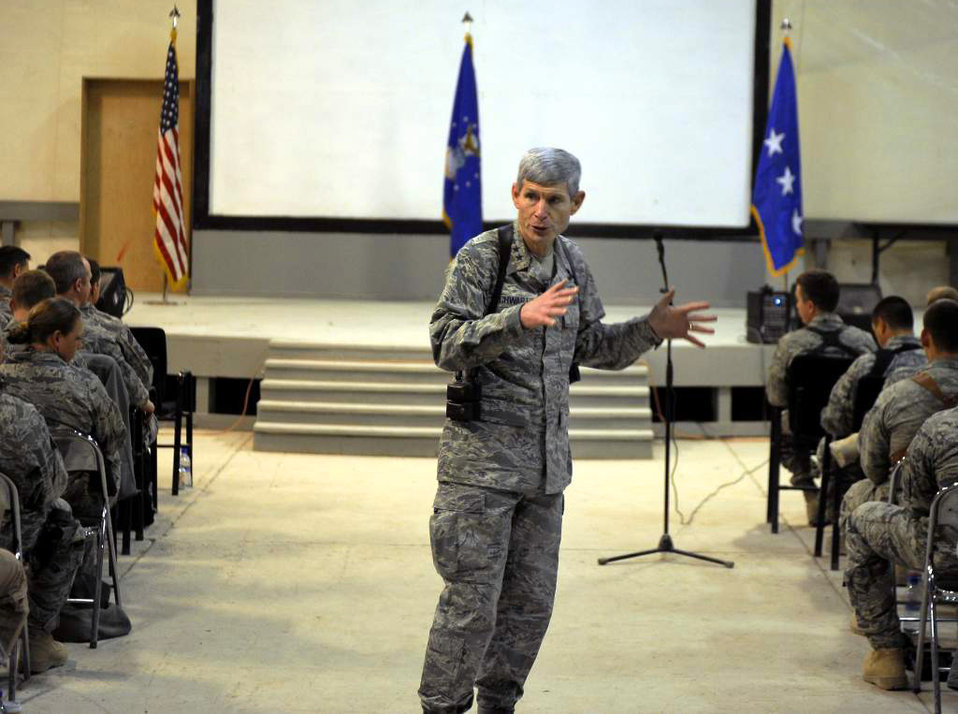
CSAF visits AFCENT bases

Air Force Chief of Staff Gen. Norton Schwartz takes questions from the audience during an “all call” Jan. 19, 2011, at Kandahar Airfield, Afghanistan. The general spoke to Airmen about manning, suicide prevention, and the repeal of Don’t Ask Don’t Tell. He also answered questions from the Airmen on topics ranging from commissioning opportunities to joint expeditionary taskings.